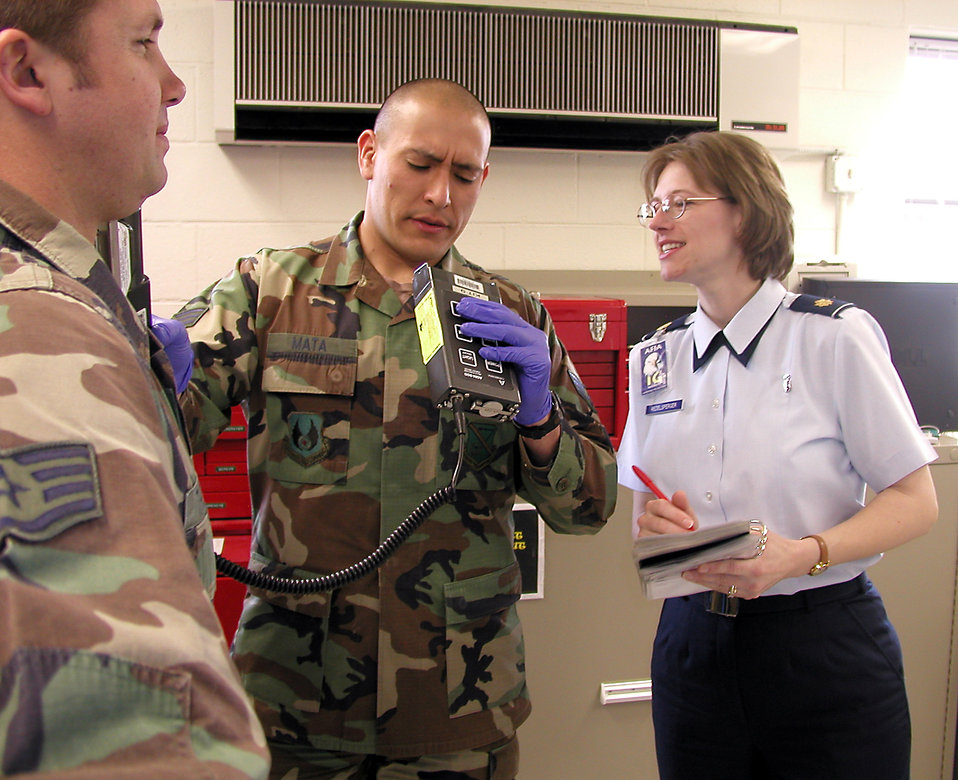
AFIA's health services inspections demystified

KIRTLAND AIR FORCE BASE, N.M. -- Maj. Cynthia Redelsperger ensures medics can properly monitor for radiation contamination. She is an Air Force Inspection Agency inspector here.